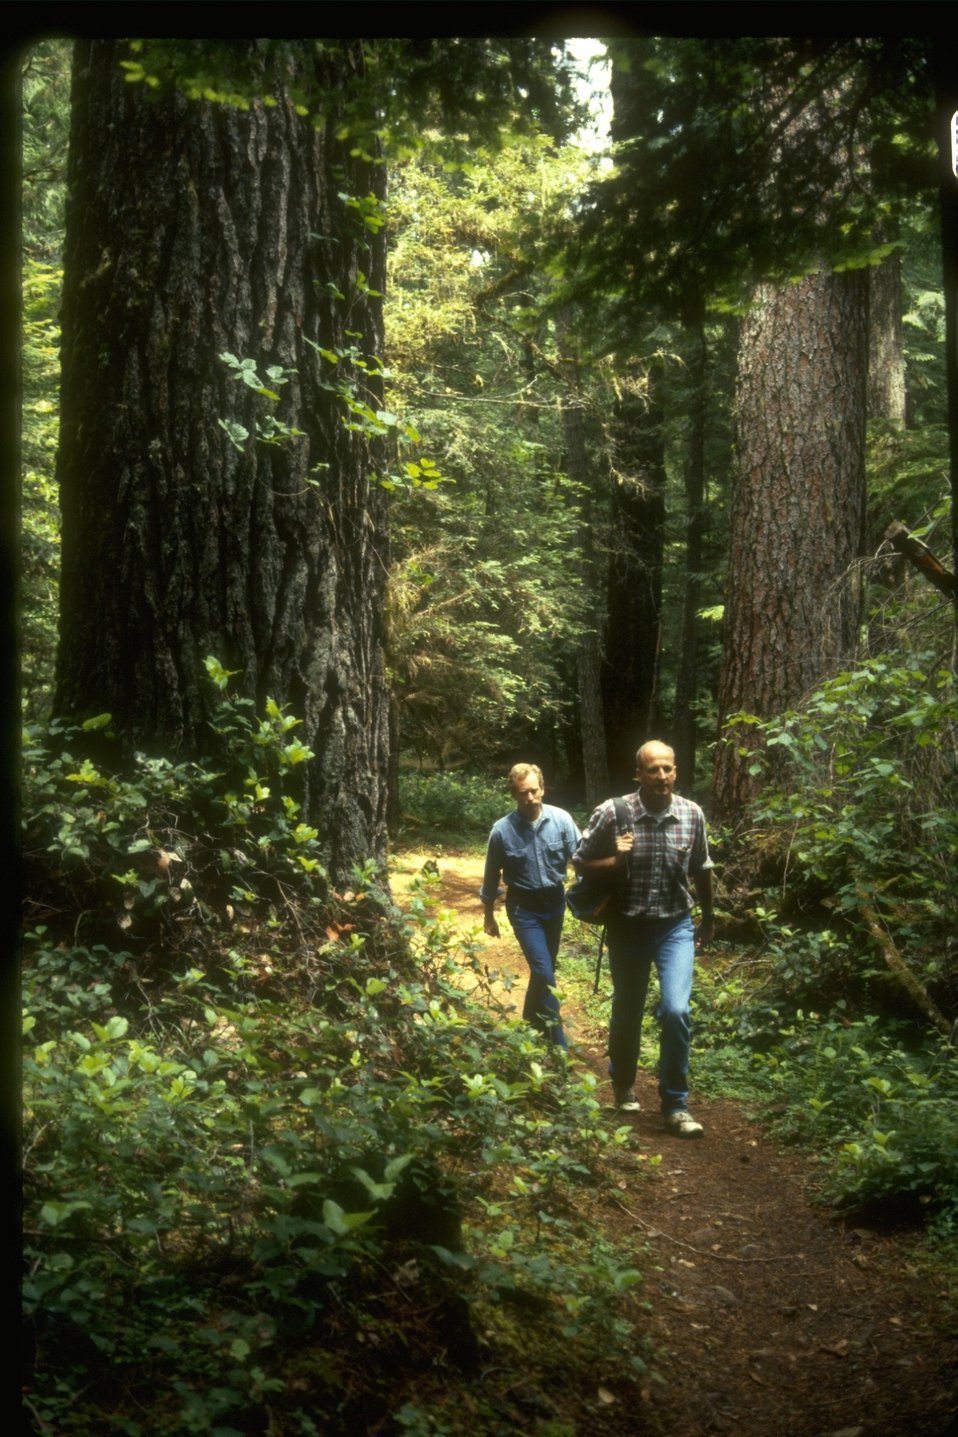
Hiking on the North Umpqua Trail.